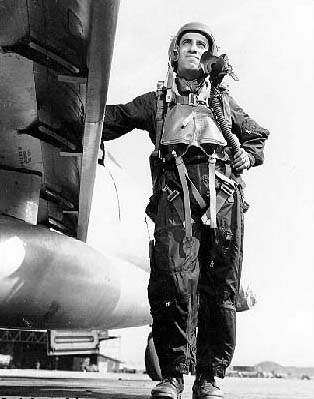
Lieutenant Colonel James Jabara

1950's -- Lieutenant Colonel James Jabara in a flight suit with his F-86. James Jabara, the world's first jet ace, was born in Muskogee, Okla., October 1923. Jabara was the prototypical fighter pilot, although perhaps not at first glance. Standing 5 feet 5 inches tall, Jabara was nevertheless larger than life. He was determined to enter pilot training, and he did. He was equally determined to become an ace in his F-86 Sabre, and he did.